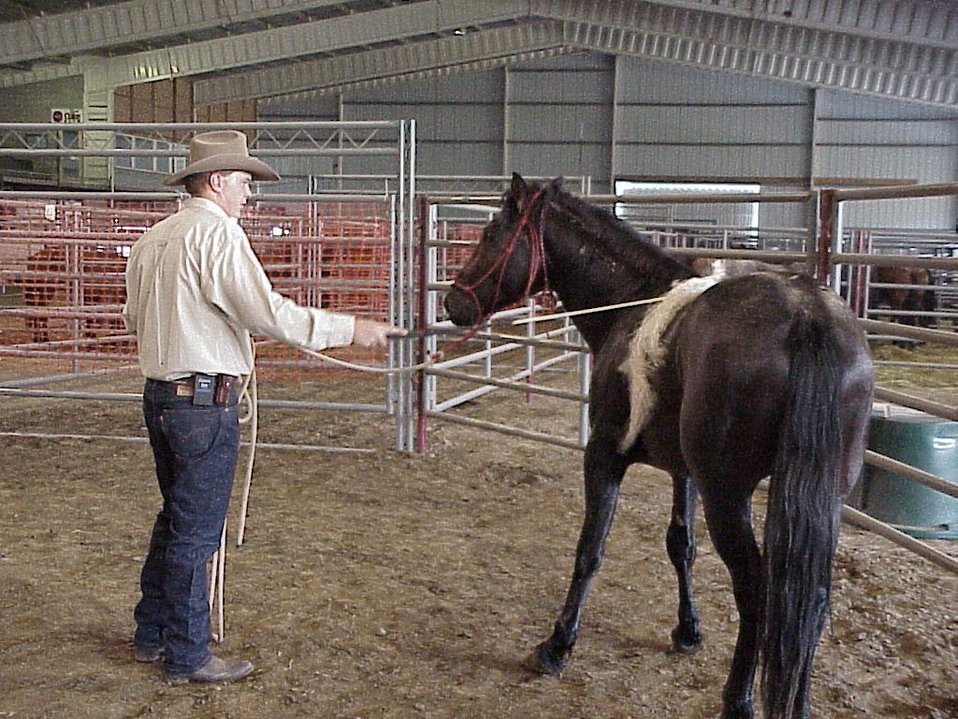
Horse Gentler Mario Johnson Lewiston Wild Horse and Burro Adoption Program Auction WHB indoor auction Cottonwood Field Office UCSC Upper Columbia Salmon Clearwater District